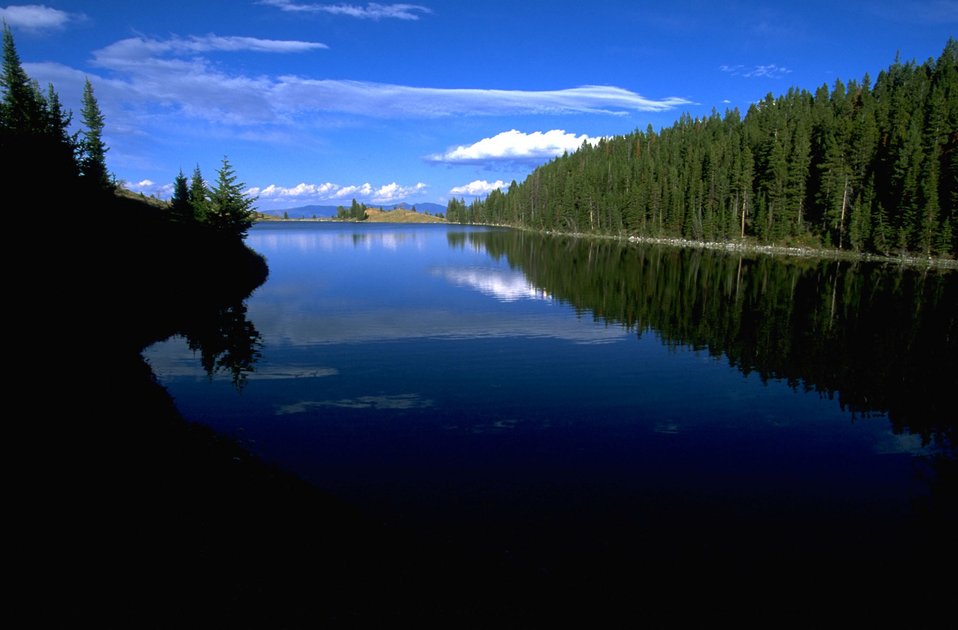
Axolotl Lake near Virginia City